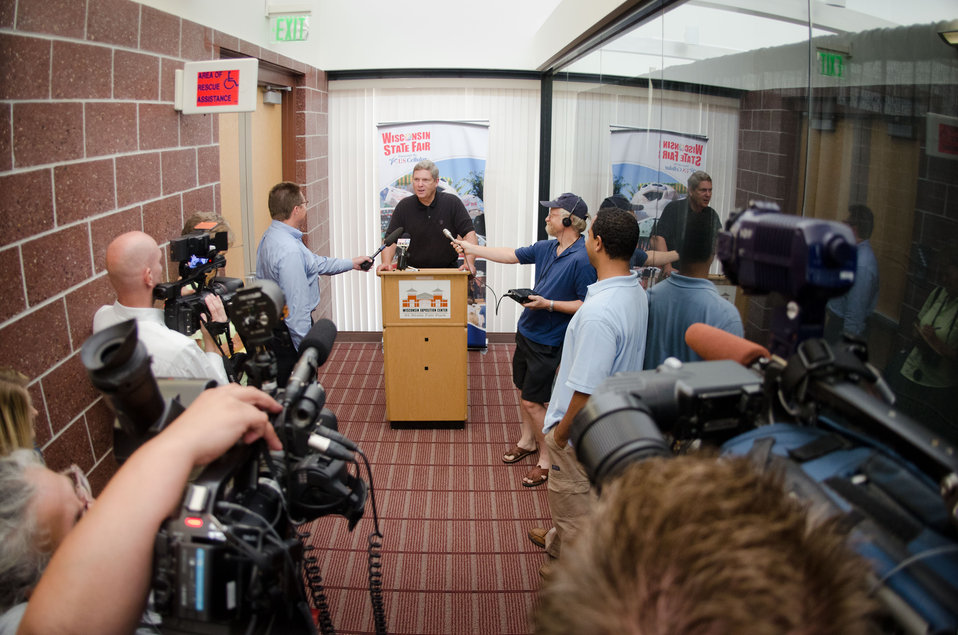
Agriculture Secretary Tom Vilsack speaking with members of the press at the Wisconsin State Fair Grounds, Exposition Center in West Allis, WI, on Thursday, August 4, 2011.